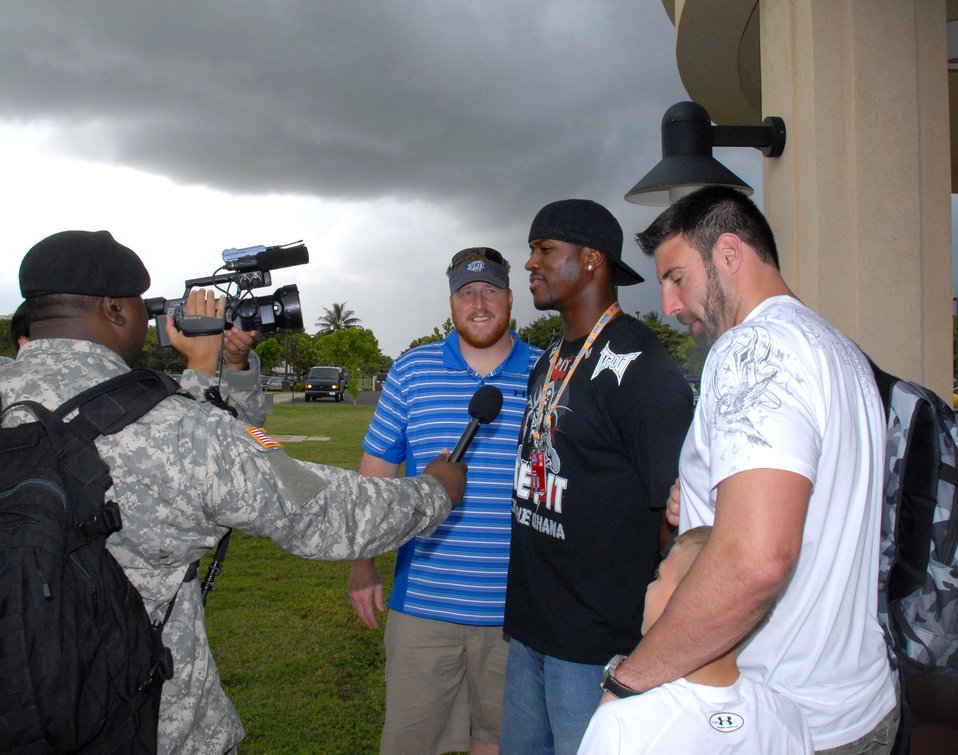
Airmen support Pro Bowl

San Diego Chargers wider receiver Kassim Osgood (second from right) fields a question from an Army reporter after flying the C-17 Globemaster III simulator Feb. 7 at Hickam Air Force Base, Hawaii. New England Patriots Mike Varbel (far right) and his son Tyler watch along with Patriots center Dan Koppen. The Pro Bowl players appearance at Hickam AFB included a chance to fly the C-17 simulator, a tour of a C-17 and a speech to children in the before and after school youth center children program.